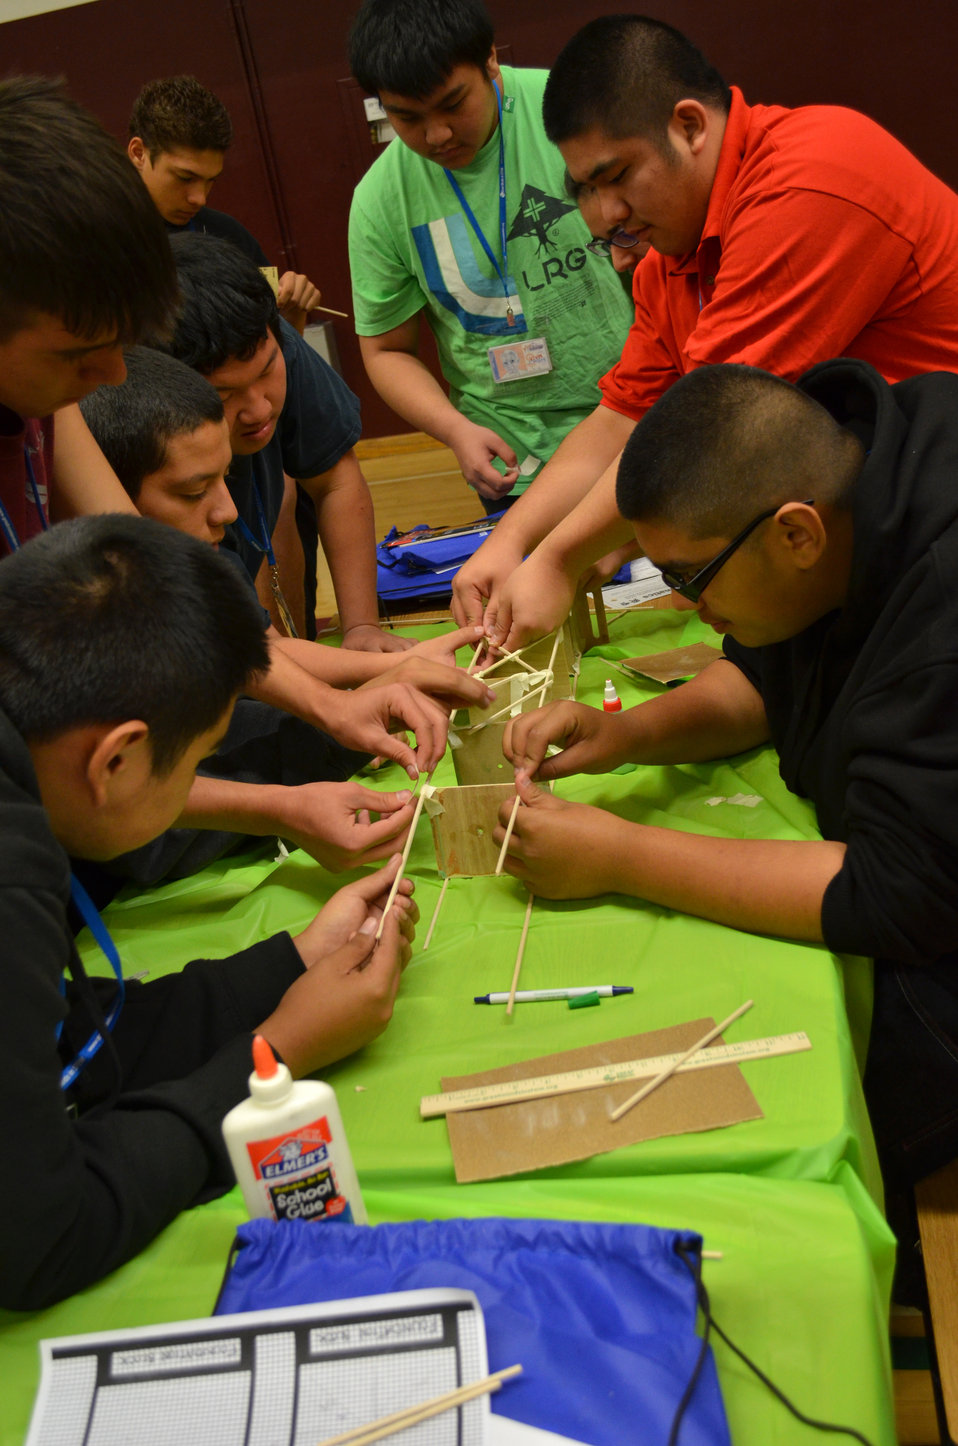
Engineering challenge at Hiram W. Johnson High School

Students at Hiram W. Johnson High School in Sacramento, Calif., work on a 24-inch wooden tower during a science, technology, engineering and mathematics - or STEM - event Nov. 9, 2012. Hosted by the U.S. Army Corps of Engineers Sacramento District, the STEM event provided an opportunity for the students to learn more about degrees and careers in STEM- related fields.